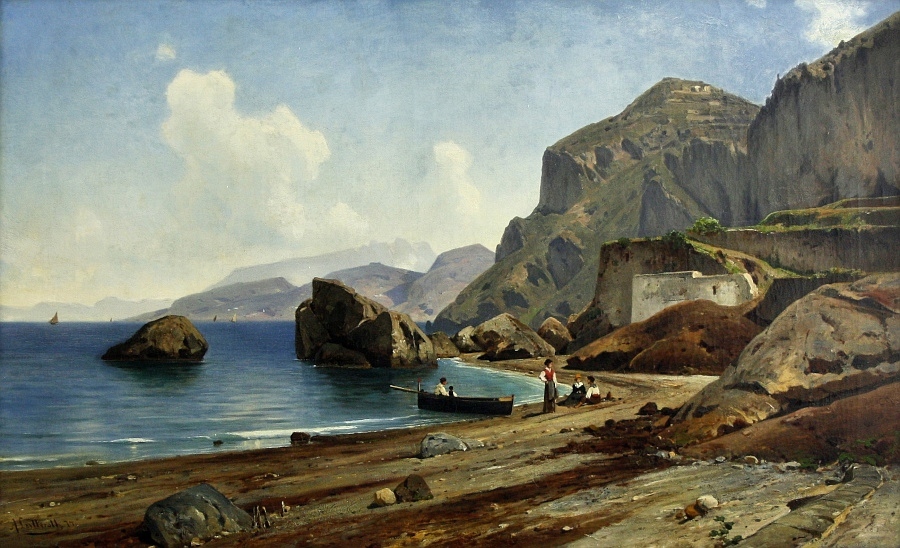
'Grosse Marine auf Capri', Öl auf Leinwand, 61 x 101 cm, unten links handsigniert und datiert 'A. Lutteroth (18)74', verso auf dem Keilrahmen signiert und betitelt 'A. Lutteroth Grosse Marine auf Capri'